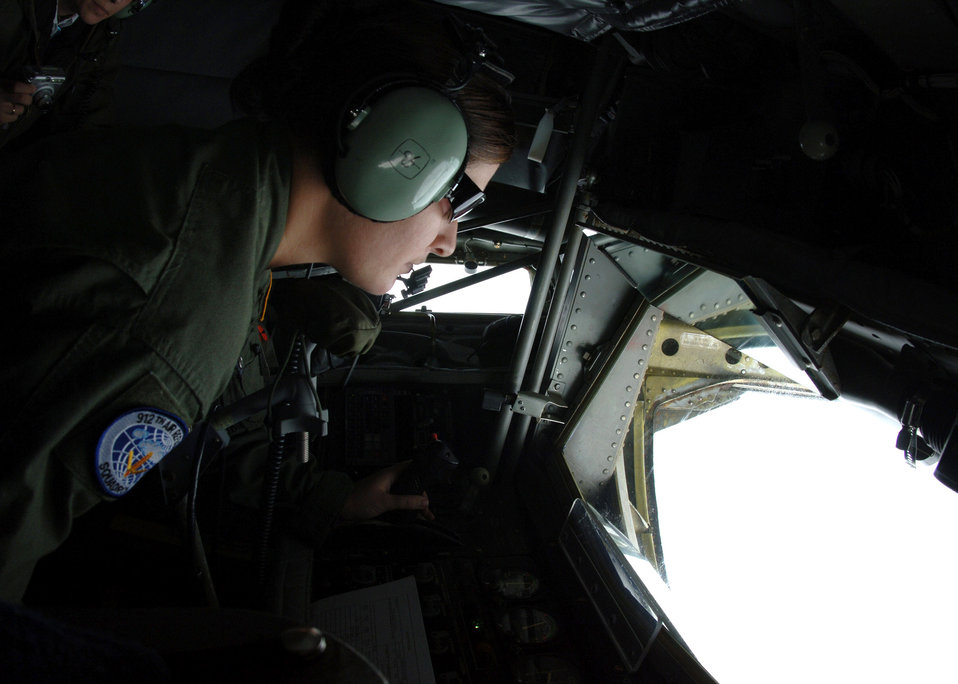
Refueling Thunderbirds

Senior Airman Whitney Bankston prepares to administer fuel to an Air Force Thunderbird during a air refueling mission Oct. 1 over the Midwestern United States. Airman Bankston is assigned to the 912th Air Refueling Squadron from Grand Forks Air Force Base, N.D.